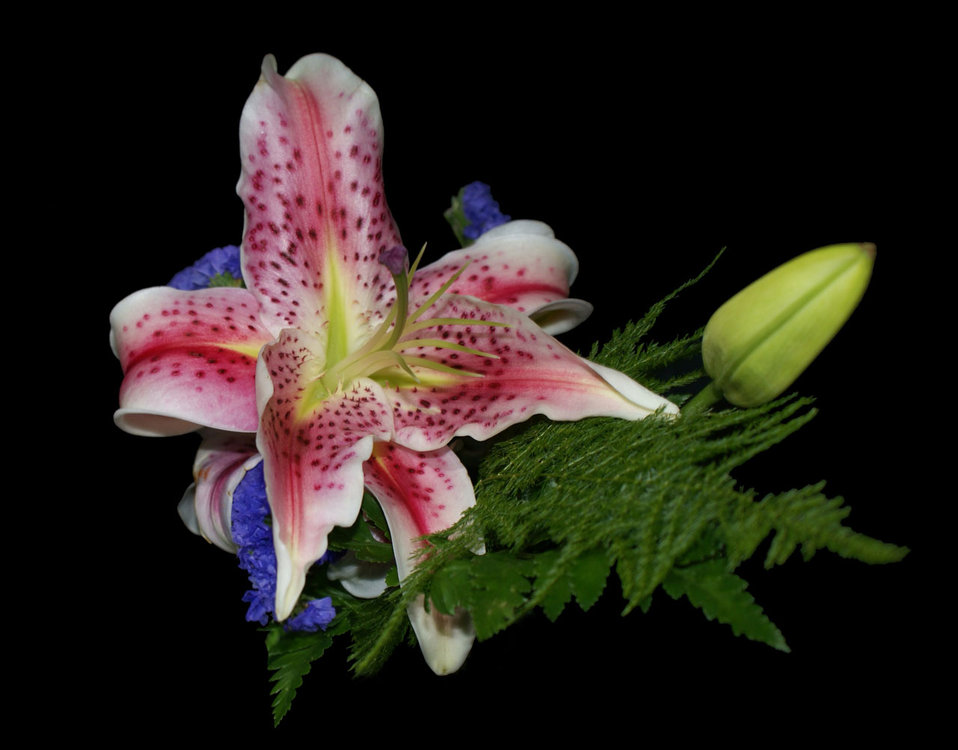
Lily flower from a bouquet..